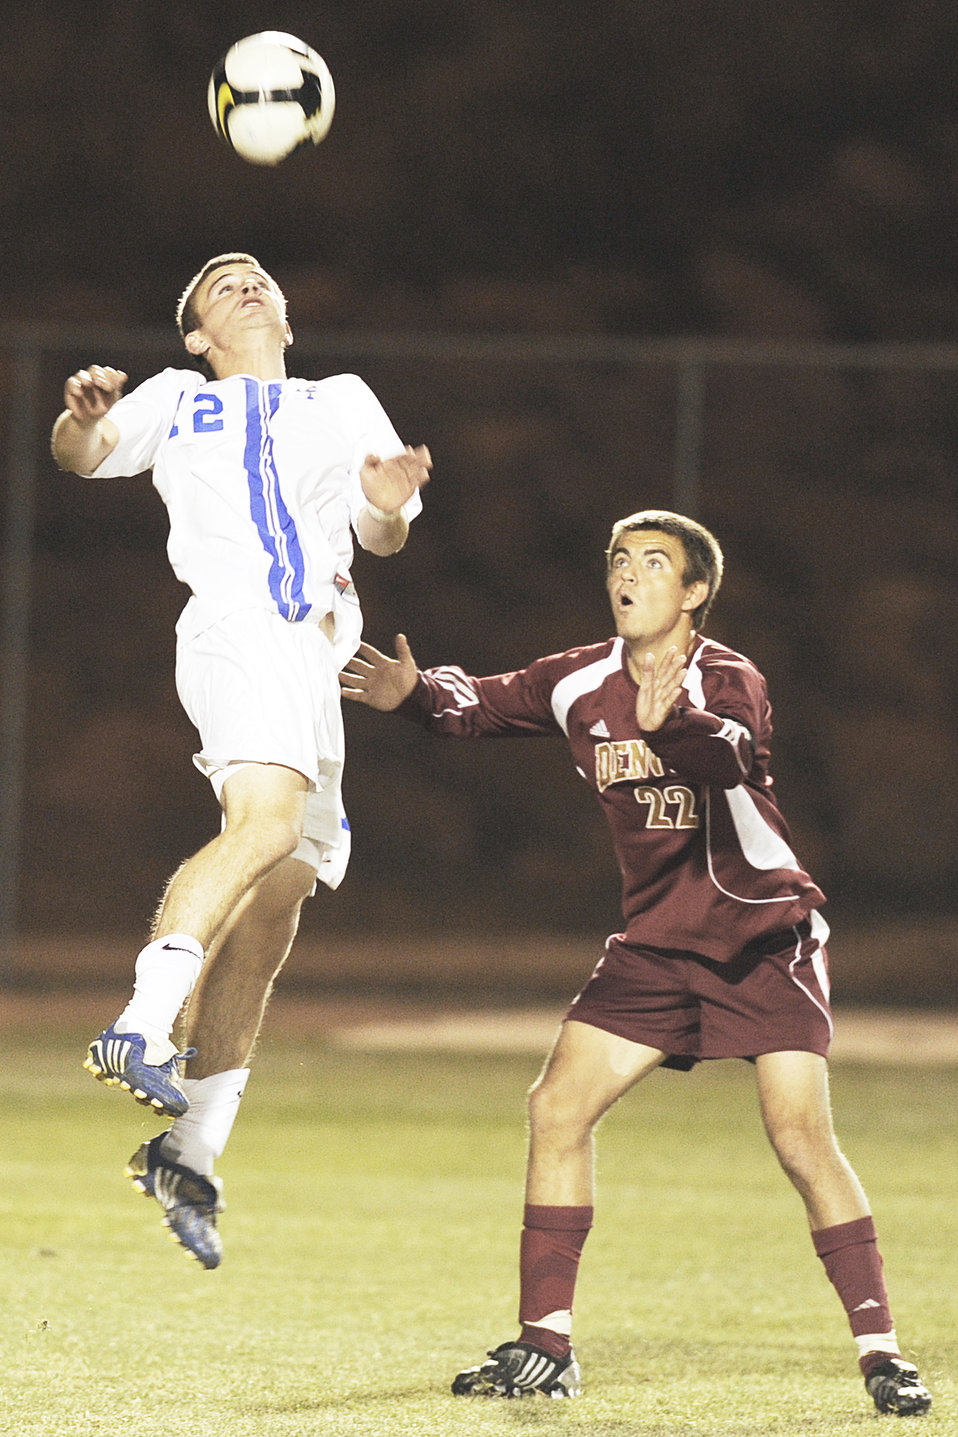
Air Force Academy

U.S. Air Force Academy, CO -- Sophomore mid-fielder Zach Brinlee beats Denver's Collin Audley to the header during action against the University of Denver at the Cadet Soccer Stadium Nov 7. Denver defeated the Falcons 2-0 in the regular-season finale for both teams. The Falcons fell to 7-8-1, and 2-5 in league play. The two teams will meet again in five days in the first round of the MPSF tournament on Nov 12 at the University of Denver Stadium. Air Force finished the season with a 5-1-1 record at home, and honored its seven seniors in a pre-game ceremony celebrating the final home game of their career.